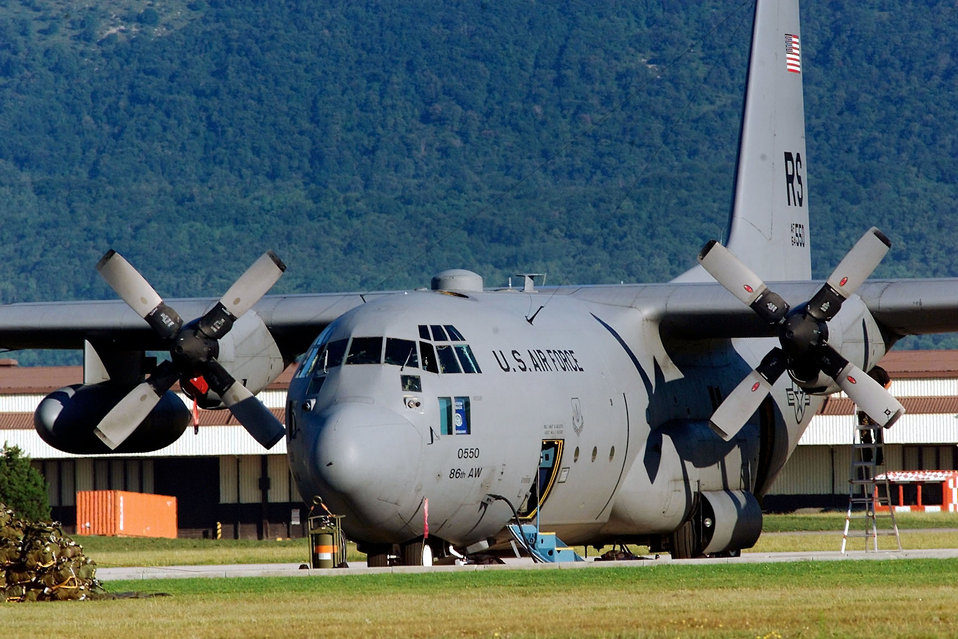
Special delivery

A Ramstein Air Base, Germany, C-130E stands ready at Aviano Air Base, Italy to deliver an Army airborne unit into Bosnia for Rapid Resolve II, a show of force exercise, on July 17, 2000.